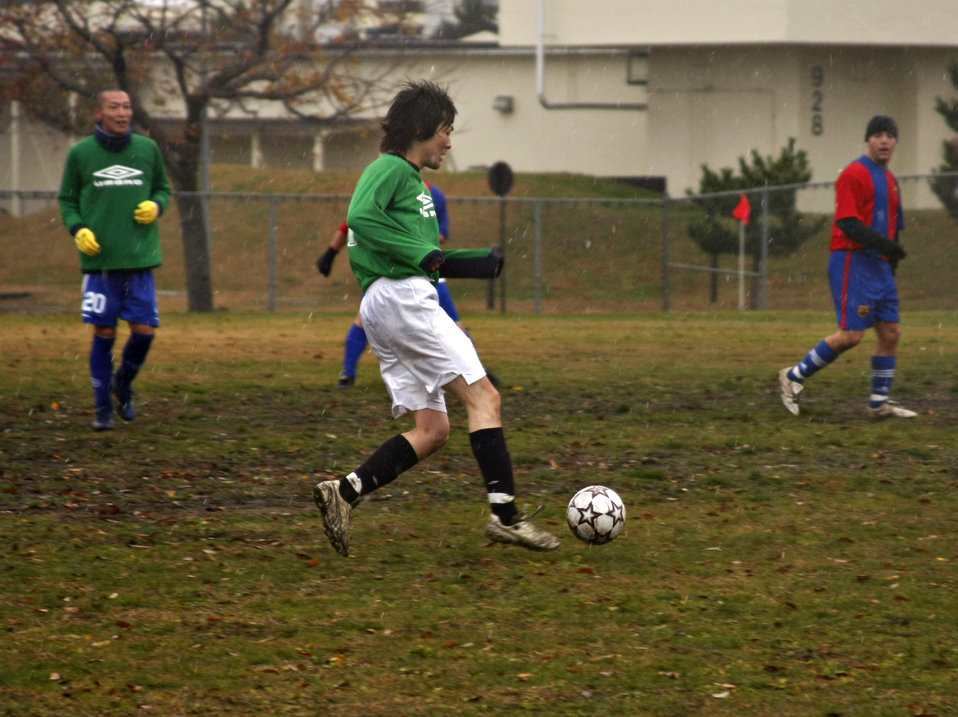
Misawa team forges international friendships on the field

Daisuke Ishikawa from the Misawa Dolphins moves the ball toward the goal in an exhibition match between the Dolpins and Misawa United Nov 18 at Misawa Air Base, Japan. Misawa United is part of an off-base league that invited the Dolphins and another team, Misawa FC, for a few friendship games.